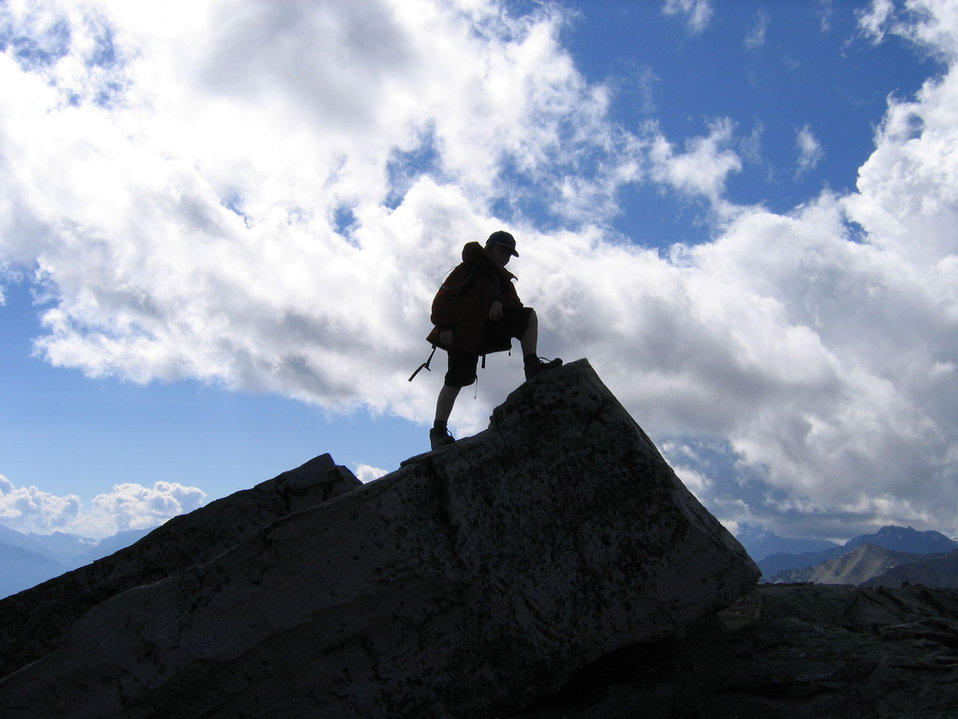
Hiking

Silhouette of hiker in the canadain rockies.